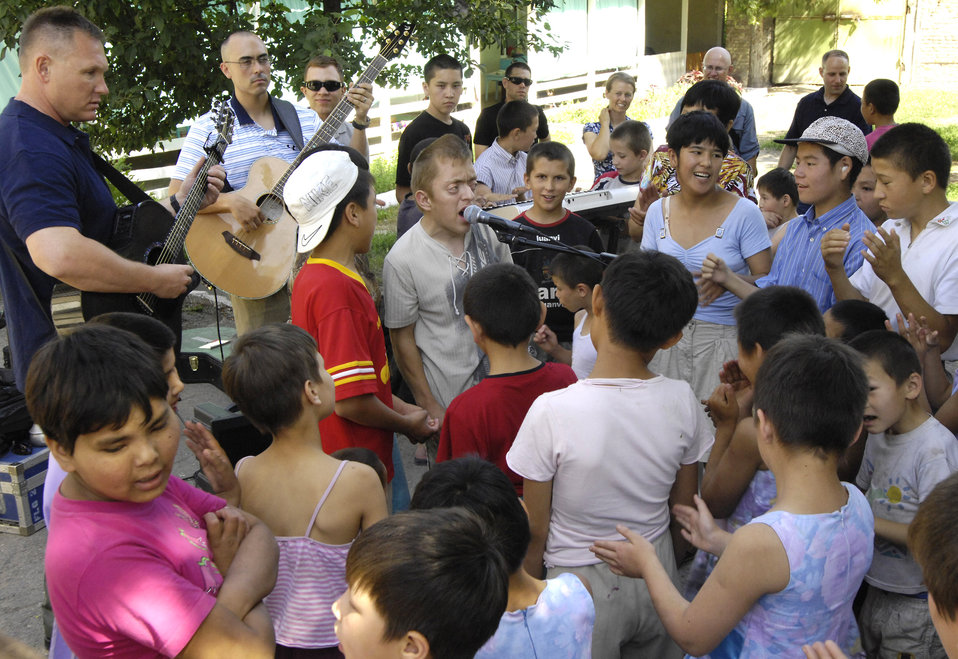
Special concert for some special children

The children of the Belovodosky Orphanage in Kyrgyzstan, sing some of their favorite Russian military songs for the The U.S. Air Forces Central Band Falcon members who were performing there June 14.